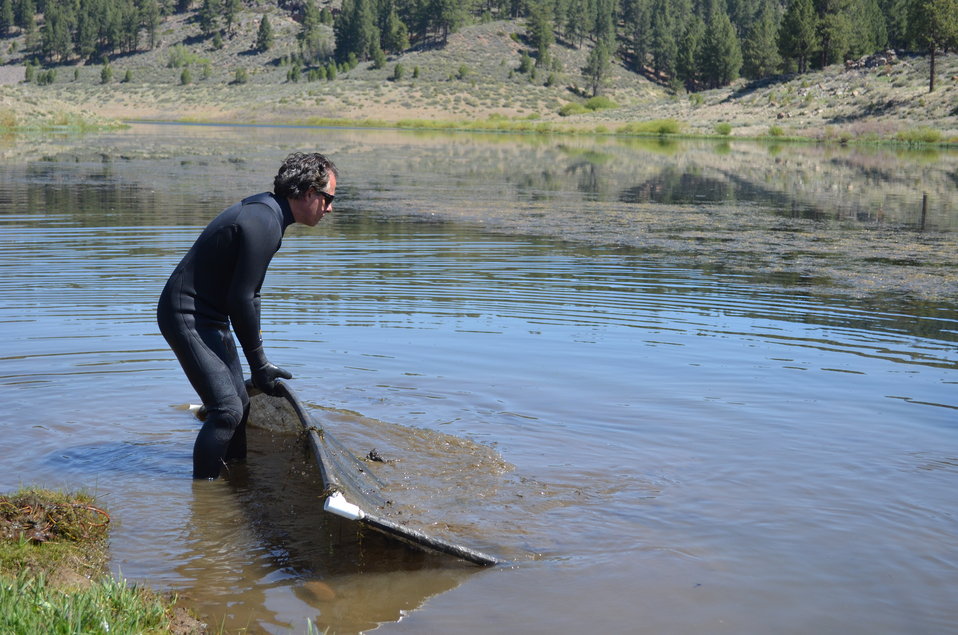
Corps fights invasive weeds at Martis Creek Lake

Tahoe Divers Conservancy director, Phil Caterino, removes a weed barrier from Martis Creek Lake in Truckee, Calif., during a removal, cleaning and replacement project May 19, 2012. The gas-permeable barriers kill invasive plants by blocking sunlight, but don't disturb other plant and animal species. The U.S. Army Corps of Engineers and Tahoe Divers Conservancy have teamed up to sustainably eradicate invasive milfoil at the lake, managed by the Corps’ Sacramento District. Video